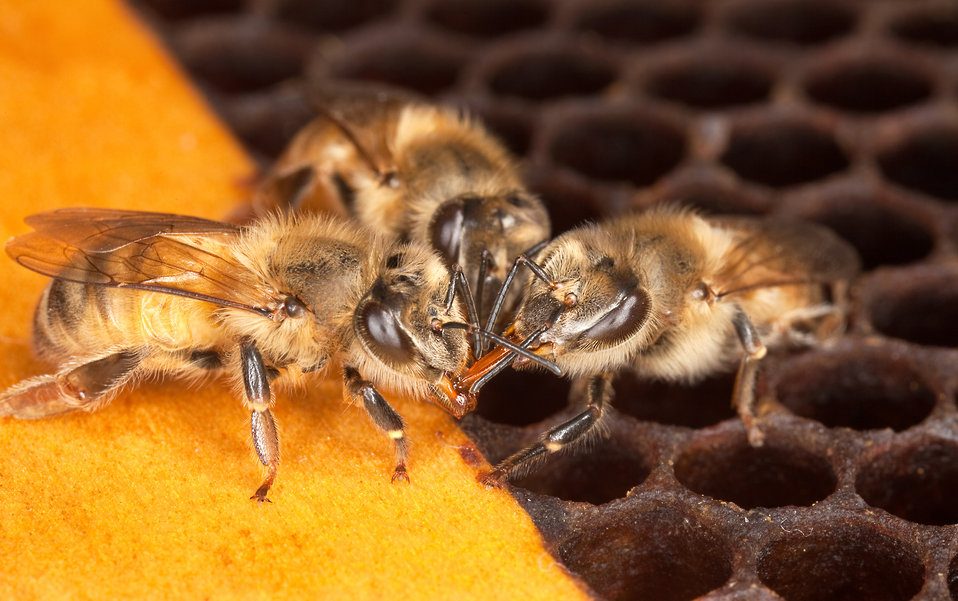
U.S. Department of Agriculture (USDA) Agricultural Research Service (ARS) scientists study the transfer of food or other fluids among members of a bee community through mouth-to-mouth feeding as a possible facilitator of colony collapse disorder on Oct. 26, 2011.